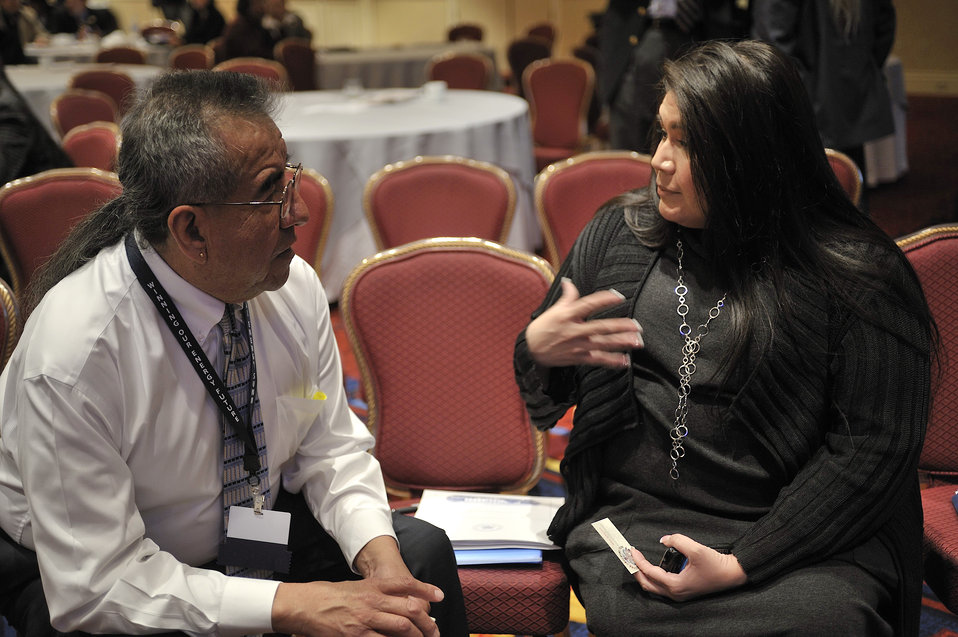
Tribal Energy Summit

White House Domestic Policy Council Special Advisor on Native American Affairs, Ms. Kimberly Teehee discusses issues with Wes Martel, Co-Chairman Eastern Shoshone Tribe